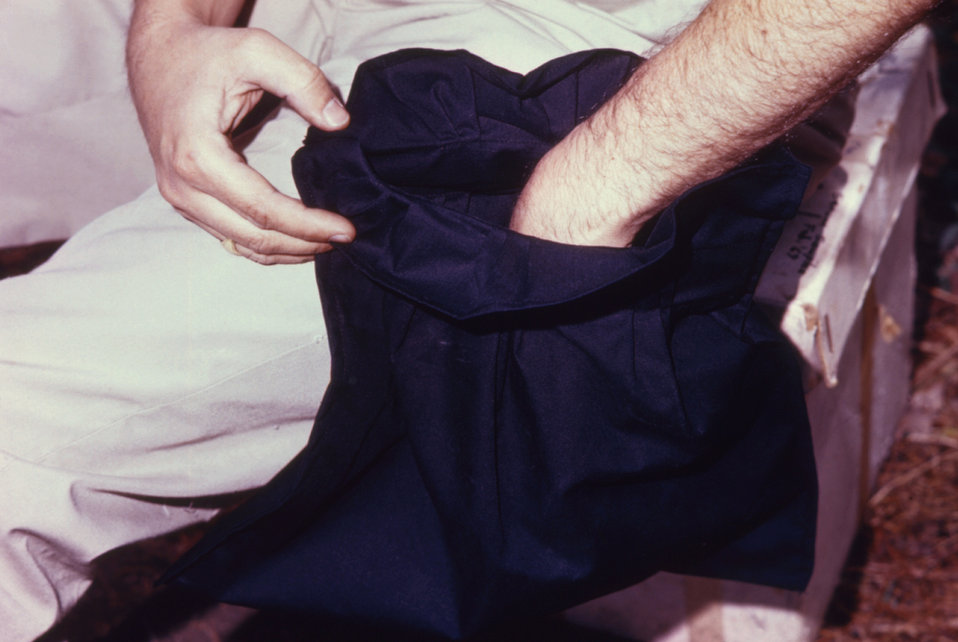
This black bag is used to hold, and quiet captured birds to be tested during arbovirus studies.